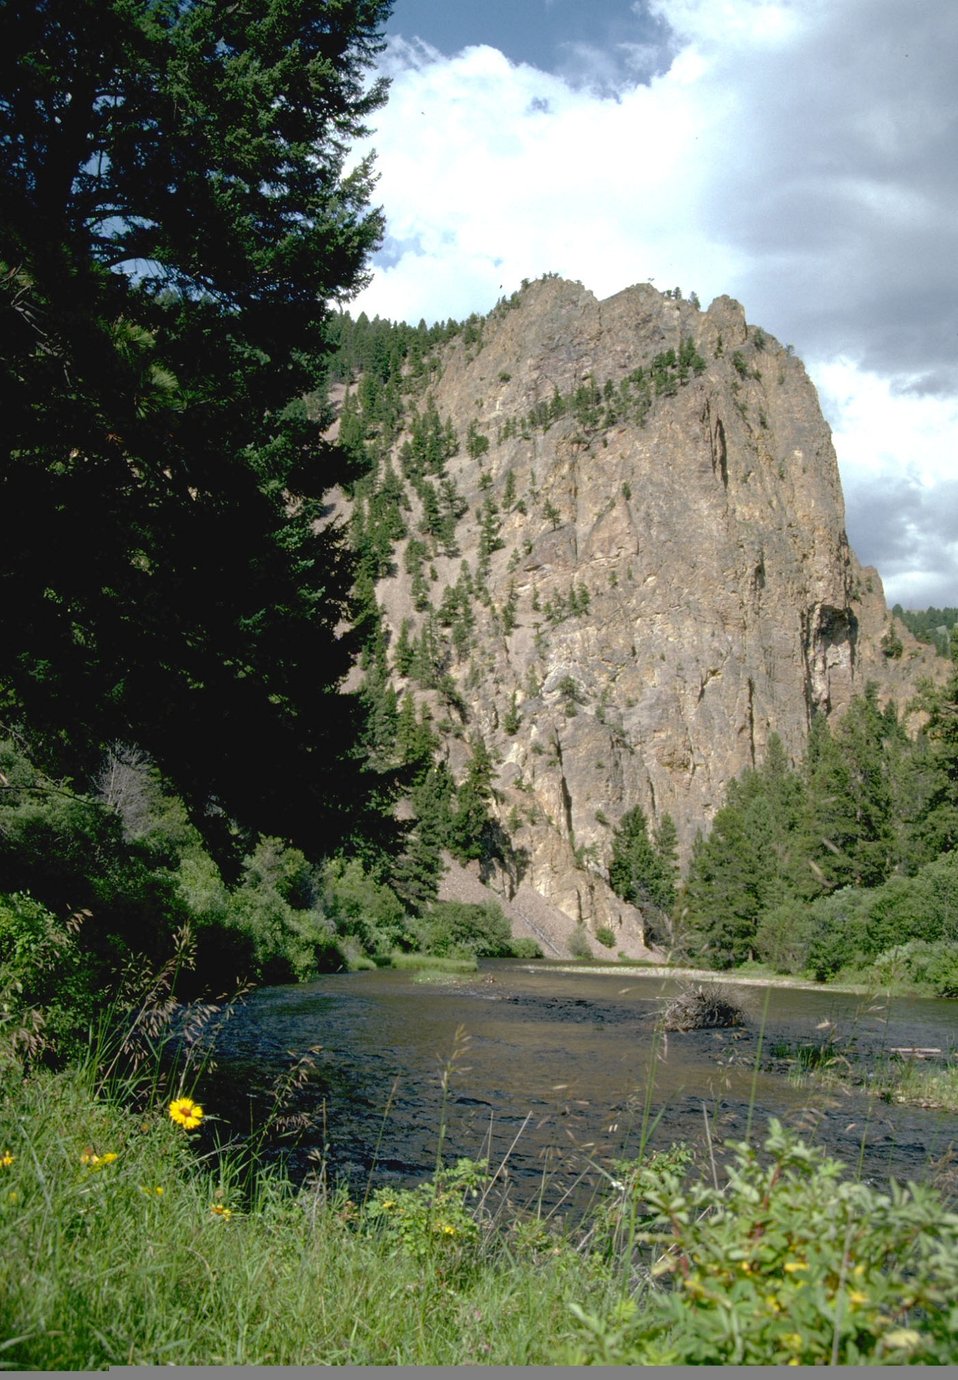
Rock Creek/Garnet area